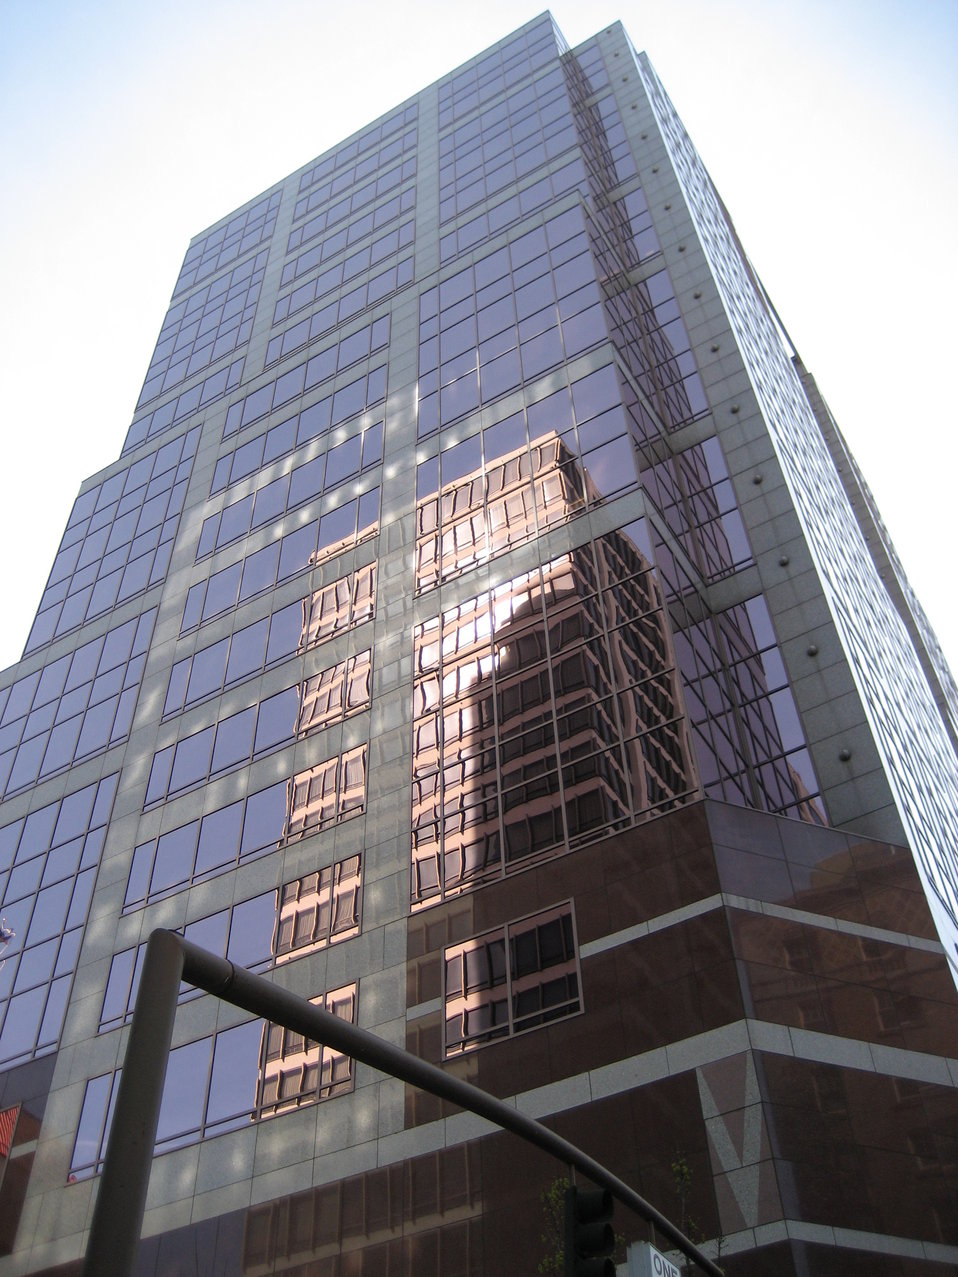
1000 Broadway Building in w:Portland, Oregon, USA.